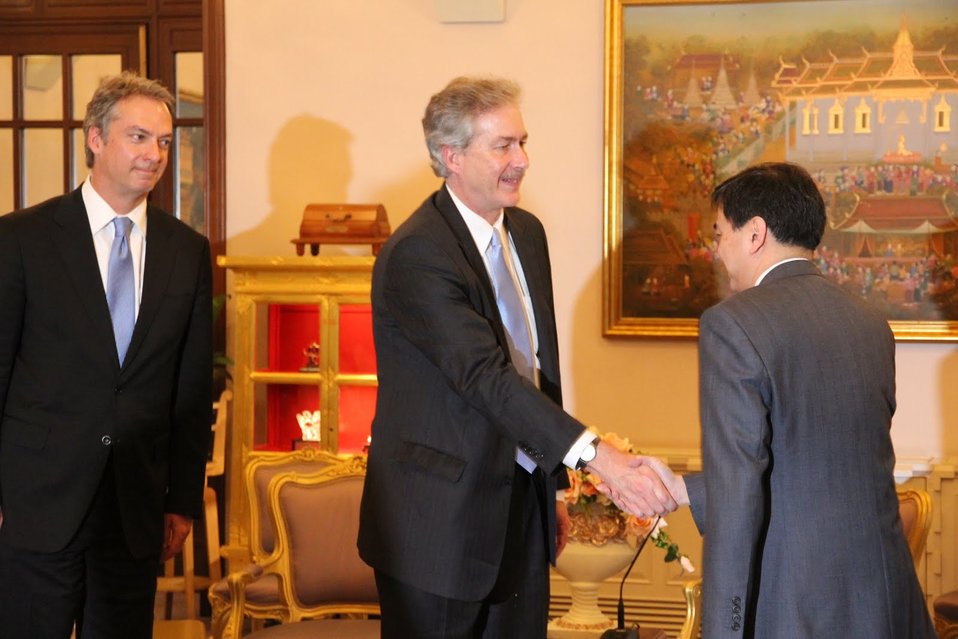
Under Secretary Burns and Thai Prime Minister Abhisit Vejjajiva Shake Hands

U.S. Under Secretary of State William J. Burns and Thai Prime Minister Abhisit Vejjajiva shake hands at the Thai Government House in Bangkok, Thailand, on June 16, 2010.